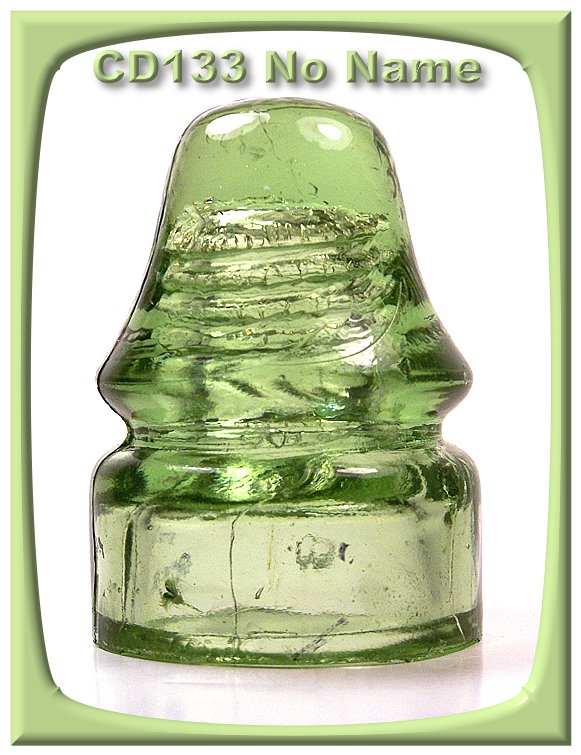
Pin insulator. Author: Lee Brewer Source: picture taken of personal possessions - released to public Domain